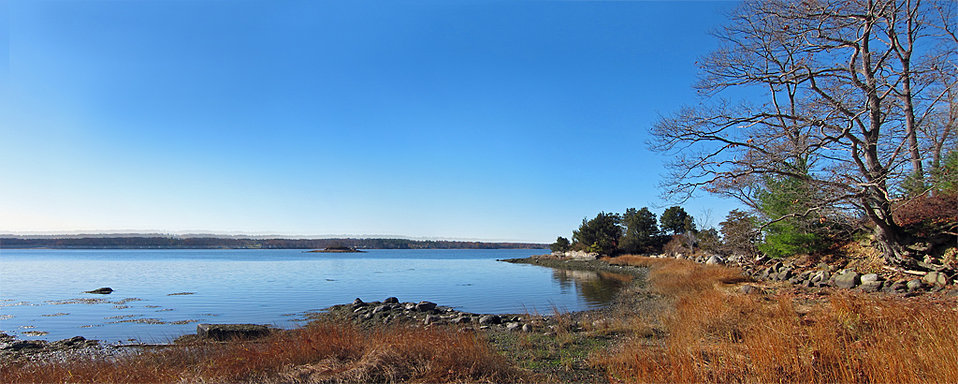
Great Bay National Wildlife Refuge in Newington, New Hampshire